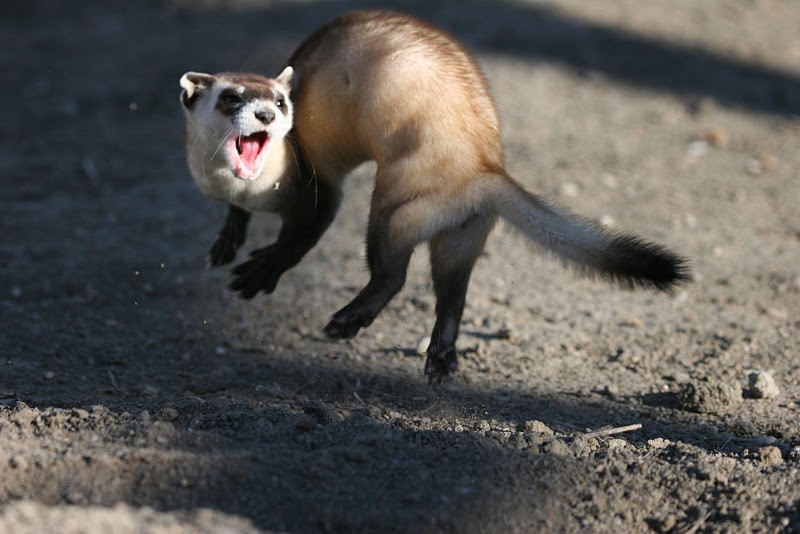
Jumping Black-footed Ferret